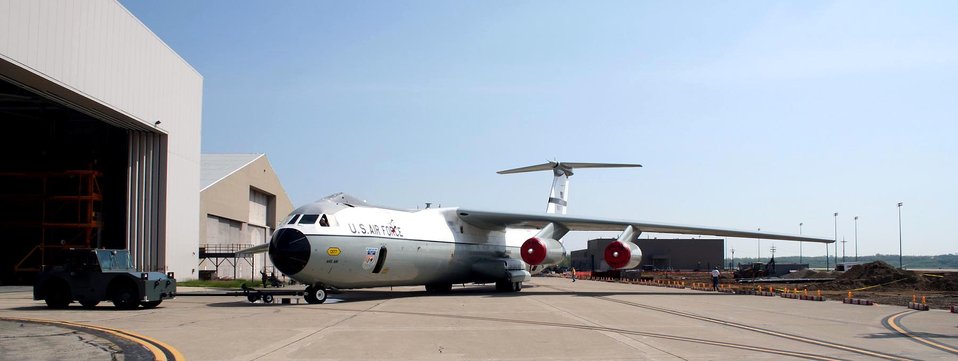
Former POWs relive freedom flights

A maintenance tug pushes the C-141 Starlifter known as the